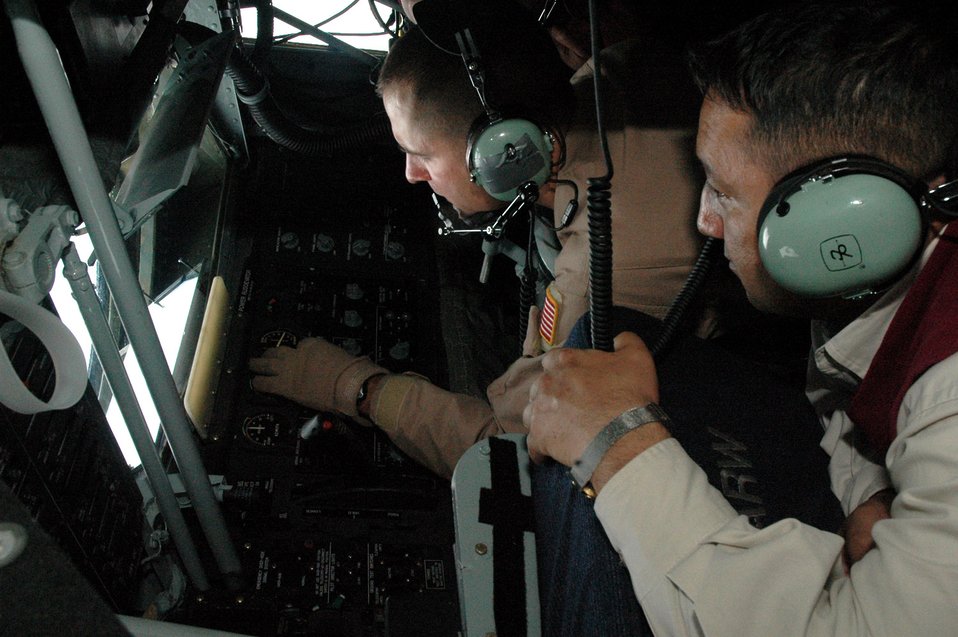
Kyrgyz government leaders experience Manas mission

Staff Sgt. Michael Brooks demonstrates the operation of the boom system of the KC-135 Stratotanker to Marat Usupov, the advisor to the Kyrgyz Ministry of Foreign Affairs May 19 above Kyrgyzstan. The demonstration was a part of an orientation flight given to 10 Kyrgyz Republic government leaders. The mission of the 376th Air Expeditionary Wing is to deliver passengers, fuel and cargo into and out of Afghanistan in support of Operation Enduring Freedom. Sergeant Brooks is a 22nd Expeditionary Air Refueling Squadron boom operator deployed from the 92nd Air Refueling Wing at Fairchild Air Force Base, Wash.